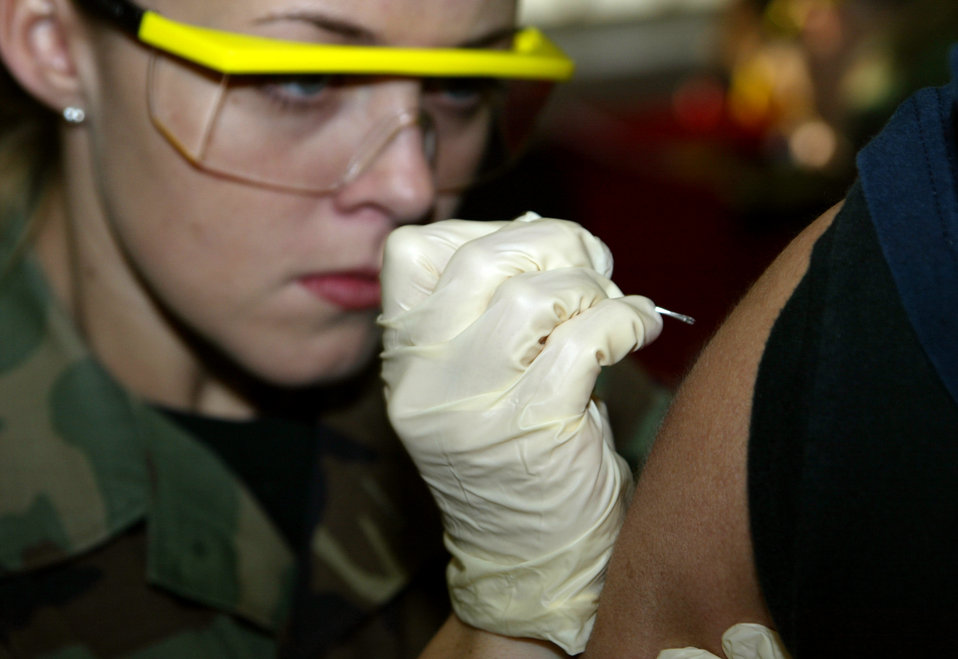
A little poke

POPE AIR FORCE BASE, N.C. -- Airman 1st Class Rebecca Burgess inoculates an airman here against smallpox Feb. 11. Burgess is a medical technician with the 43rd Medical Squadron.